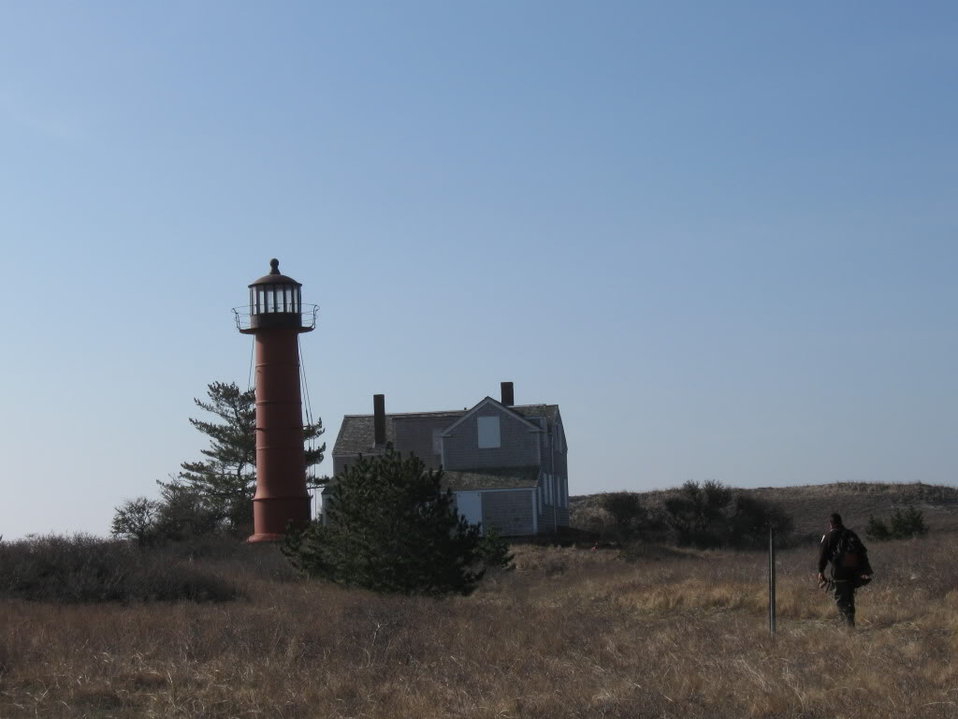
Lighthouse at Monomoy National Wildlife Refuge.

Credit: Zachary Cava/USFWS

Monomoy National Wildlife Refuge is part of the Eastern Massachusetts National Wildlife Refuge Complex.